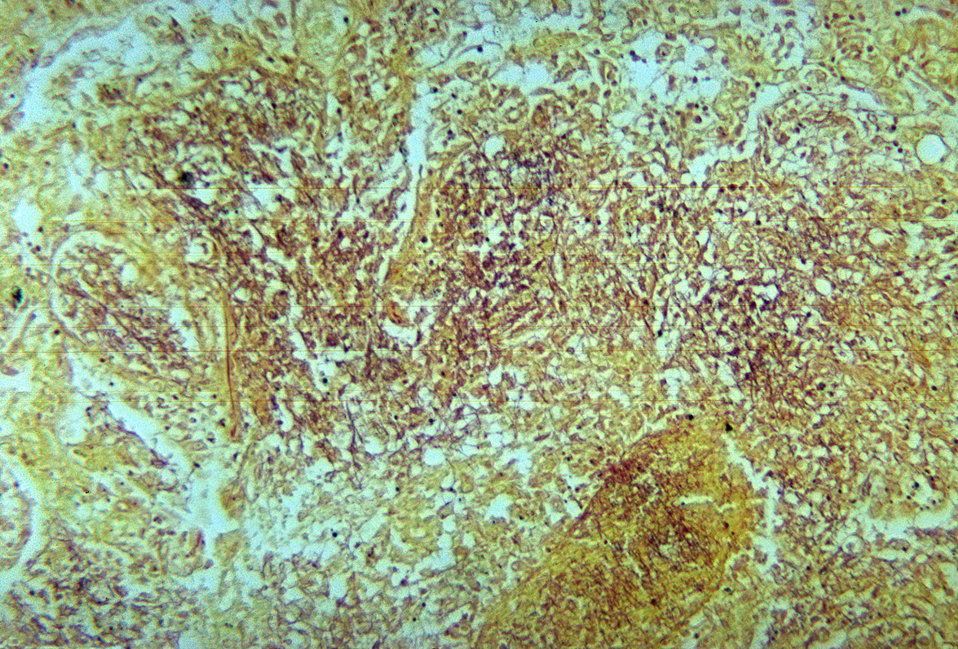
This micrograph depicts the histopathologic changes associated with nocardiosis of the lung using a Brown and Brenn stain.